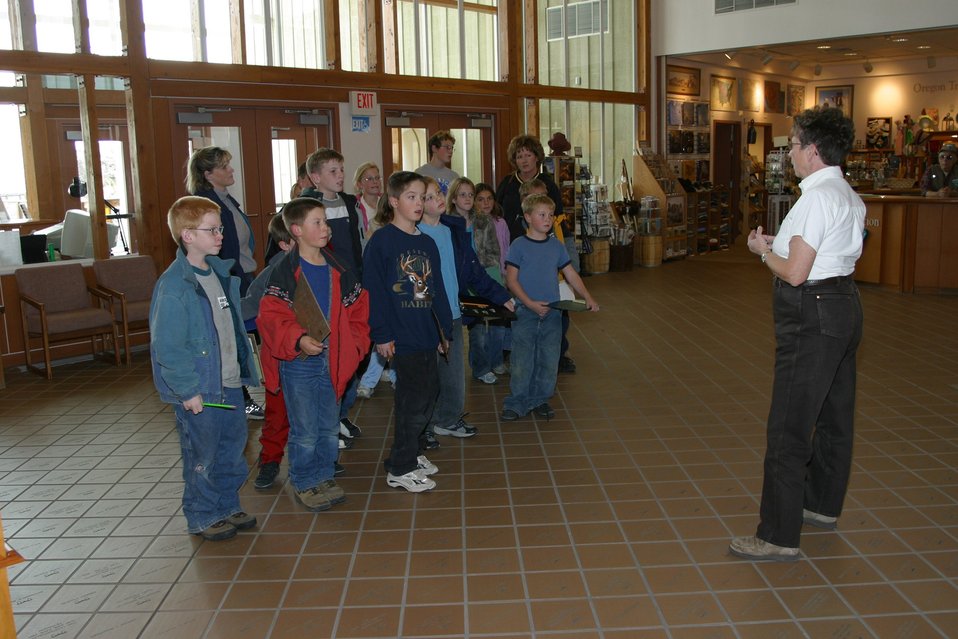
BLM employee Virginia Bloom giving students instructions for their self guided tour of the Nional Historic Oregon Trail Center.